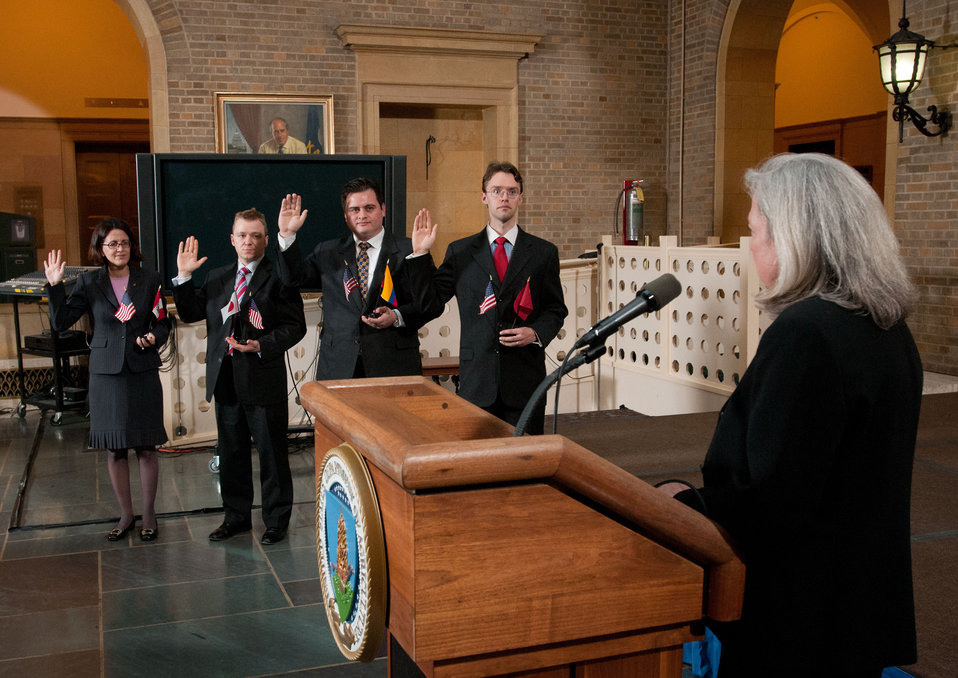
United States Department of Agriculture (USDA) Foreign Agriculture Service Acting Administrator Suzanne Heinen administers the oath of office to new foreign service officers, during the Foreign Service Oath of Office Ceremony at the U.S. Department of Agriculture in Washington, D.C., on March 15, 2012. Left to right Sigal Bernstein, Evan Mangino, Anthony Gilbert and Andrew Anderson-Sprecher. They will be stationed in Bogota, Columbia; Beijing, China; Lima Peru; and Tokyo, Japan.